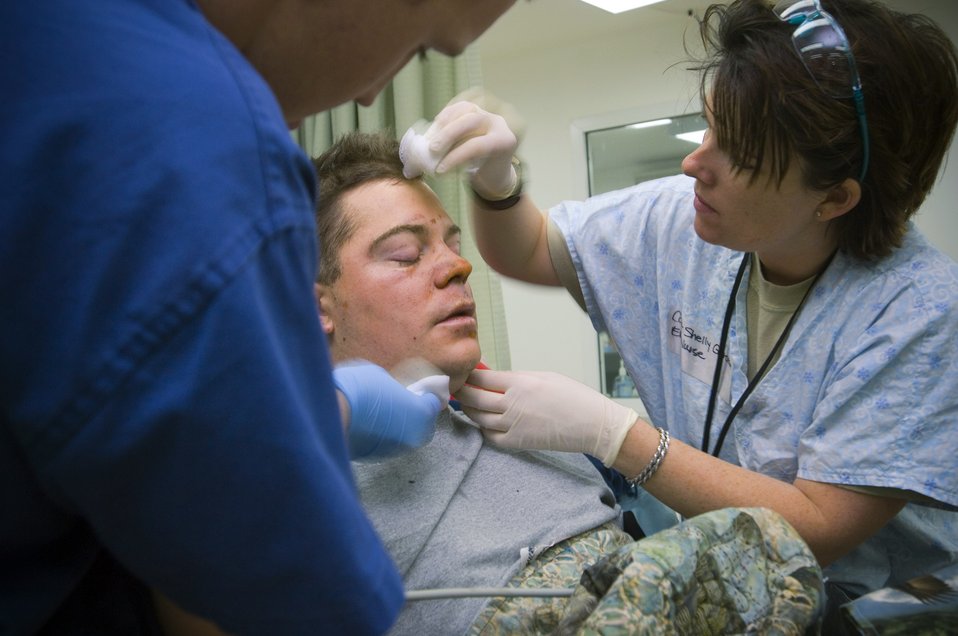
Combat Nurses

Capt. Shelly Garceau cleans burns on the forehead of Army Spc. Christopher Burrell Dec. 27 at the Air Force Theater Hospital at Balad Air Base, Iraq. Specialist Burrell sustained burns and lost his leg due to an explosive formed penetrator during an attack near Sadr City, Iraq. Captain Garceau is an emergency room nurse deployed from Wilford Hall Medical Center, San Antonio, Texas. Specialist Burrell is with the 108th Military Police Company.